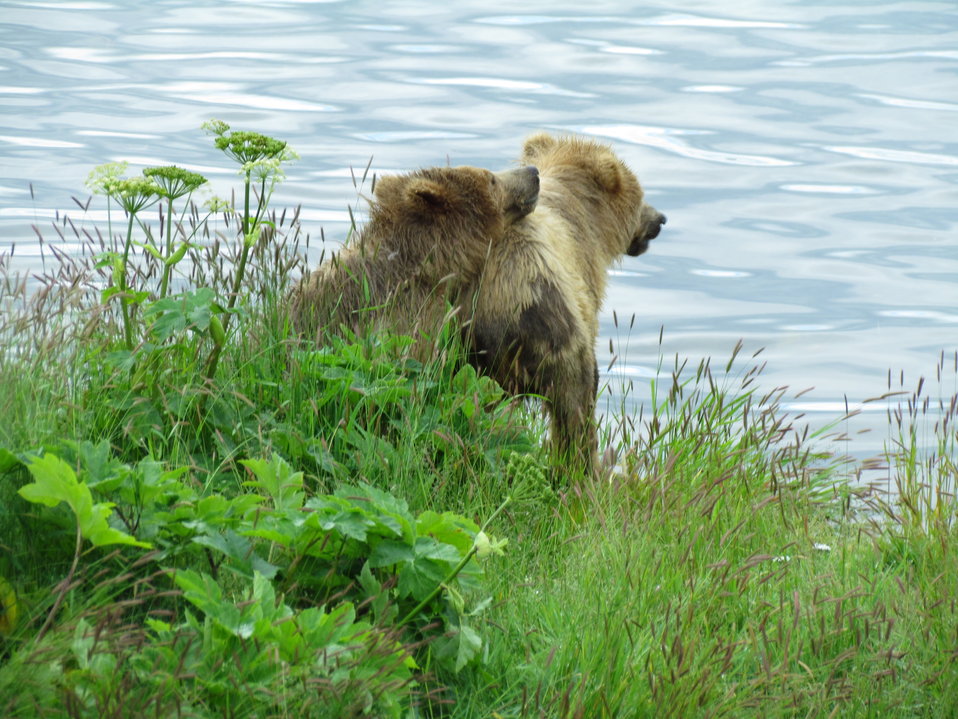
Get Your Goose On! - Alaska Style

Kodiak brown bear cubs.

Credit: Shelly Lawson / USFWS

The Kodiak National Wildlife Refuge is a United States National Wildlife Refuge in the Kodiak Archipelago in southwestern Alaska, United States.

The Kodiak National Wildlife Refuge includes the southwestern two-thirds of Kodiak Island, Uganik Island, the Red Peaks area of Afognak Island and all of Ban Island in the archipelago. It encompasses 1,990,418 acres (8,054.94 km2).[2] The refuge is administered from offices in Kodiak.

The refuge contains seven major rivers and about 100 streams. It is a spawning ground for all six species of Pacific Ocean salmon, trout and several other fish species, as well as a nesting ground for 250 species of bird, many of which feed on salmon. The refuge has only six native species of mammals: Kodiak brown bear, red fox, river otter, ermine, little brown bat and tundra vole. The non-native mammals Sitka deer, mountain goat, Roosevelt elk, snowshoe hare and beaver were introduced to the archipelago between the 1920s and 1950s and are now hunted and trapped.

The climate of the refuge is that of southern Alaska, mild and rainy. Many areas in the refuge are densely forested with Sitka Spruce at lower elevations. There are grasslands in drier areas and at higher elevations. The refuge contains several small glaciers.